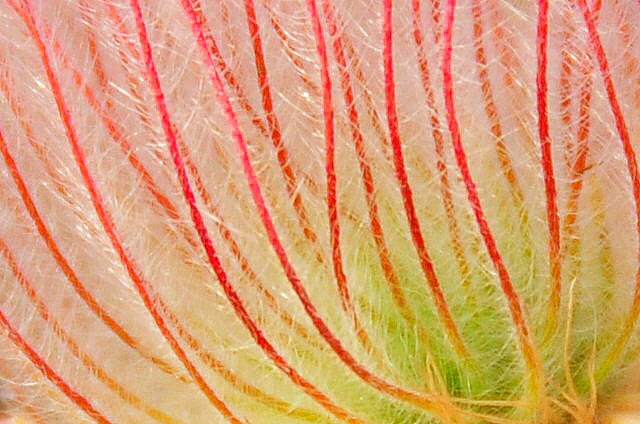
Prairie Smoke (Geum triflorum) Closeup

Closeup of a flowering prairie smoke (Geum triflorum) in the Prairie Pothole Region of South Dakota.